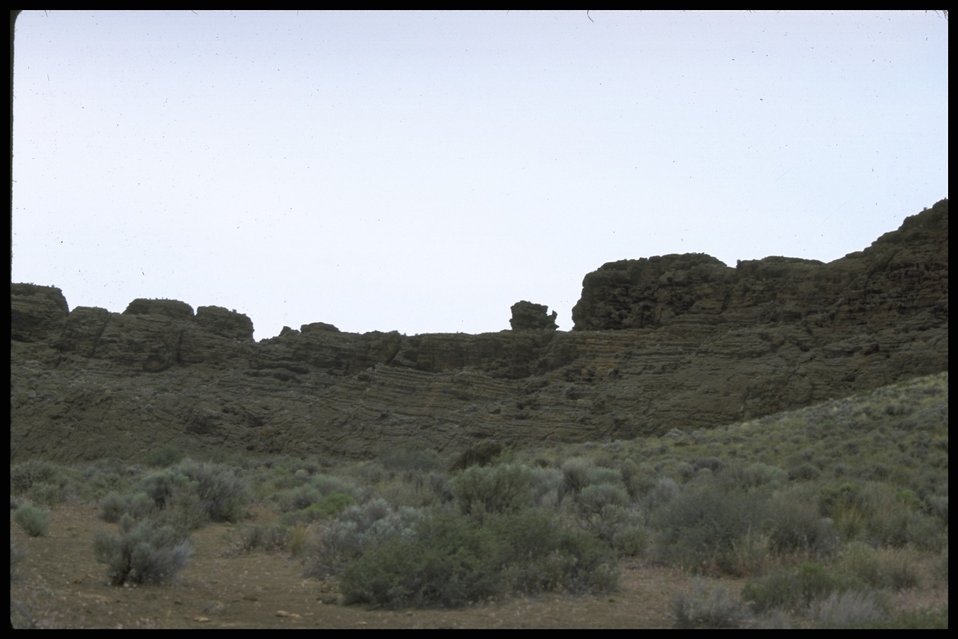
Scenic view, Ft. Rock, Lakeview District.